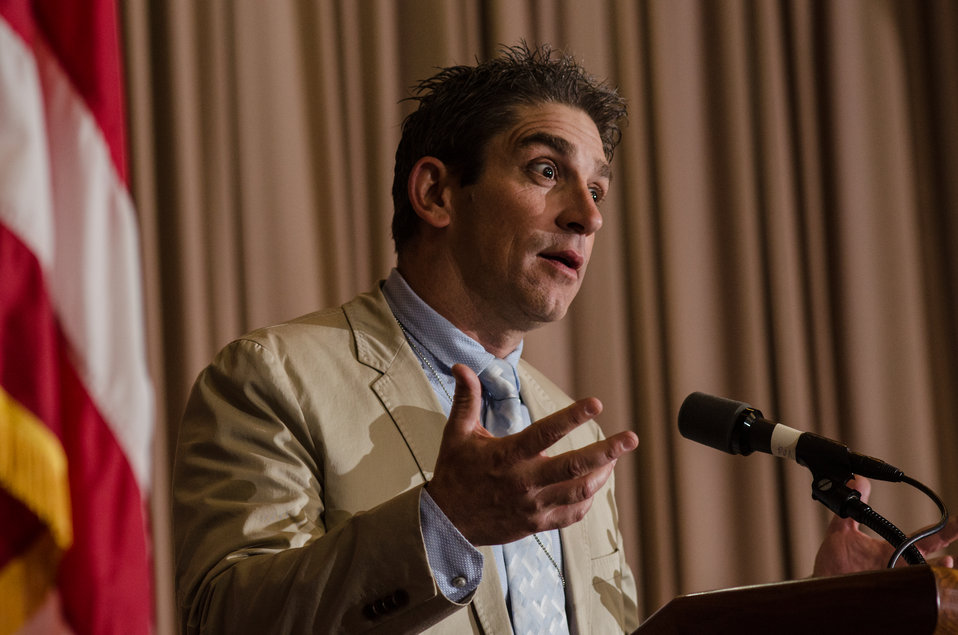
Keynote Speaker Poet Richard Blanco talks about differences in culture, language, and his childhood,at the 2013 National Hispanic Heritage Month ”Hispanics: Serving and Leading our Nation with Pride and Honor,” on Thursday, Sept. 19, 2013, in the Jefferson Auditorium, USDA Headquarters, Washington, D.C. Mr. Blanco stands as the youngest, first Latino, and first openly gay person to serve as the Presidential inaugural poet, on January 21 of this year.